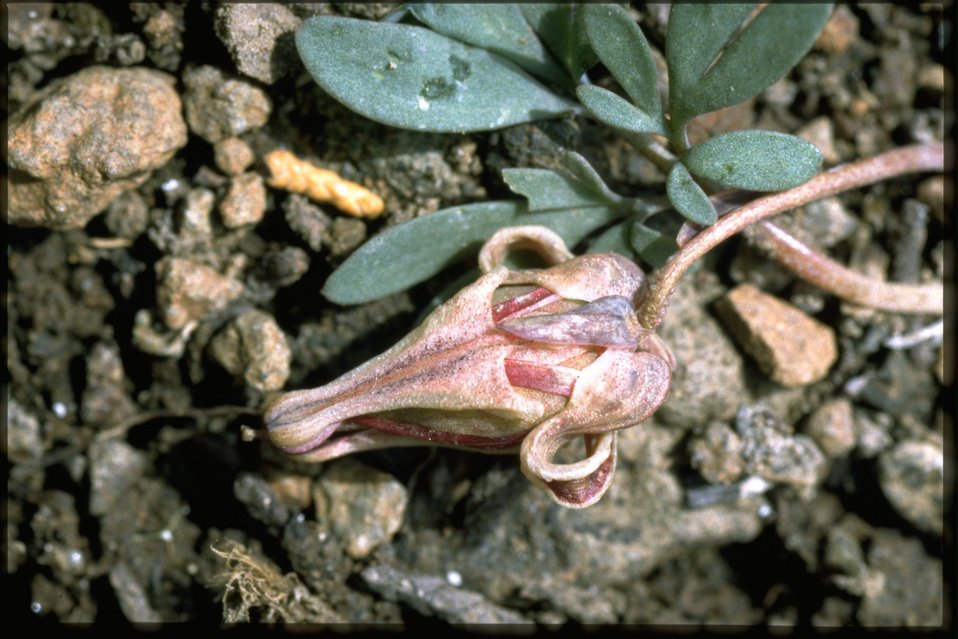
Closeup shot of Steer's Head, Dicentra Uniflora, wildflower.